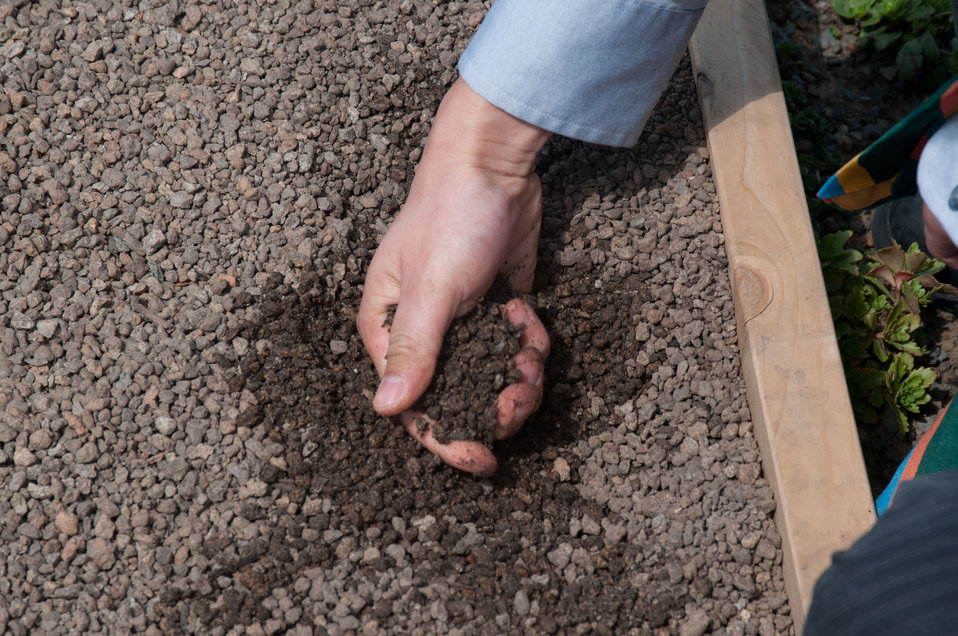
Rooftop vegetable garden is ready for planting at Bread for the City in Northwest Washington, DC, on Friday, April 29, 2011. The garden features specialized soil made of organic and inorganic material for rooftop gardens. The 30 wooden planters are about 4 inches tall but are not separate from the soil covering the roof, so there is a 10' depth to the plant in the boxes. Ground cover plants are already on site and await a team of volunteers to plant them in the walkways to retain moisture and help keep the soil temperature stable. This will be the largest of this kind in the Metro DC area. In addition to supplementing the fresh vegetable given to the community, it will also allow local residents to grown produce that is not normally marketed in this area.